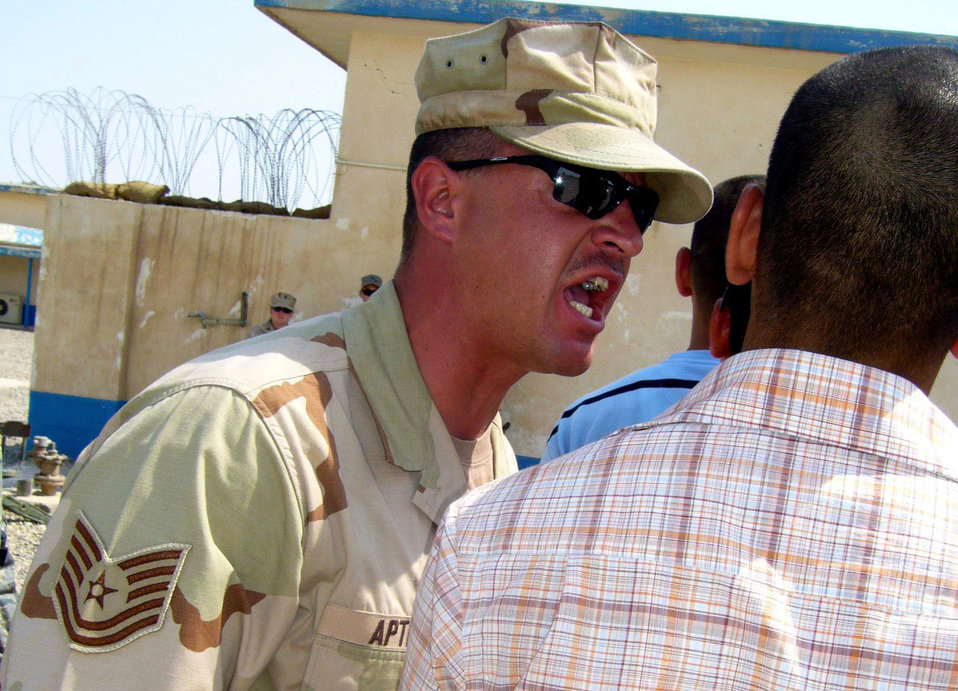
Welcome to training

Staff Sgt. Justin Apticar welcomes members of the second class of Iraqi officer training cadets to the Iraqi Air Force Training Academy at Camp Taji, Iraq. Sergeant Apticar is with the Coalition Air Force Transition Team.